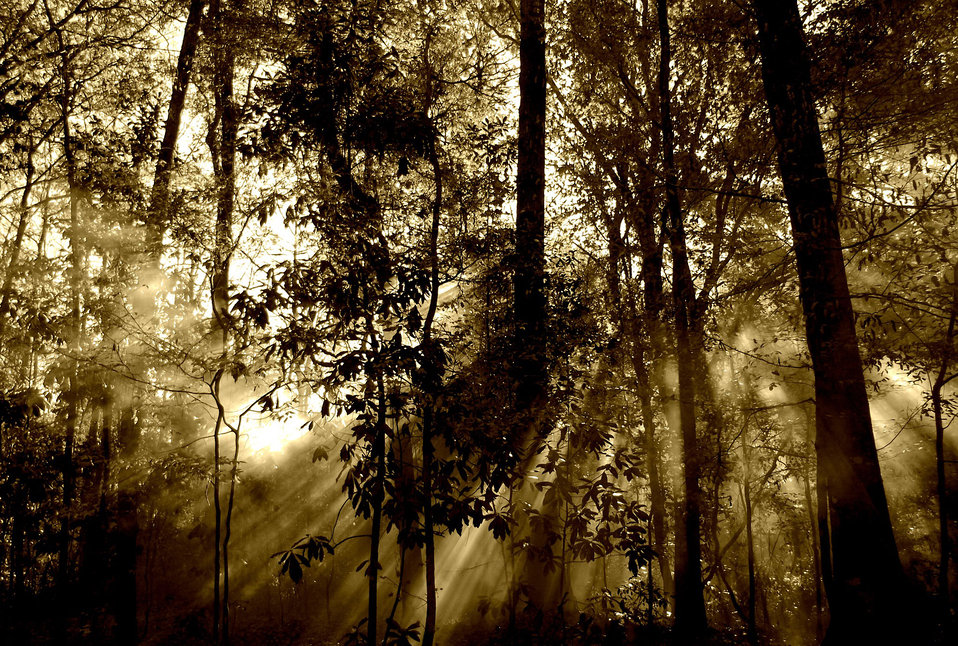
Morning

Foggy morning.